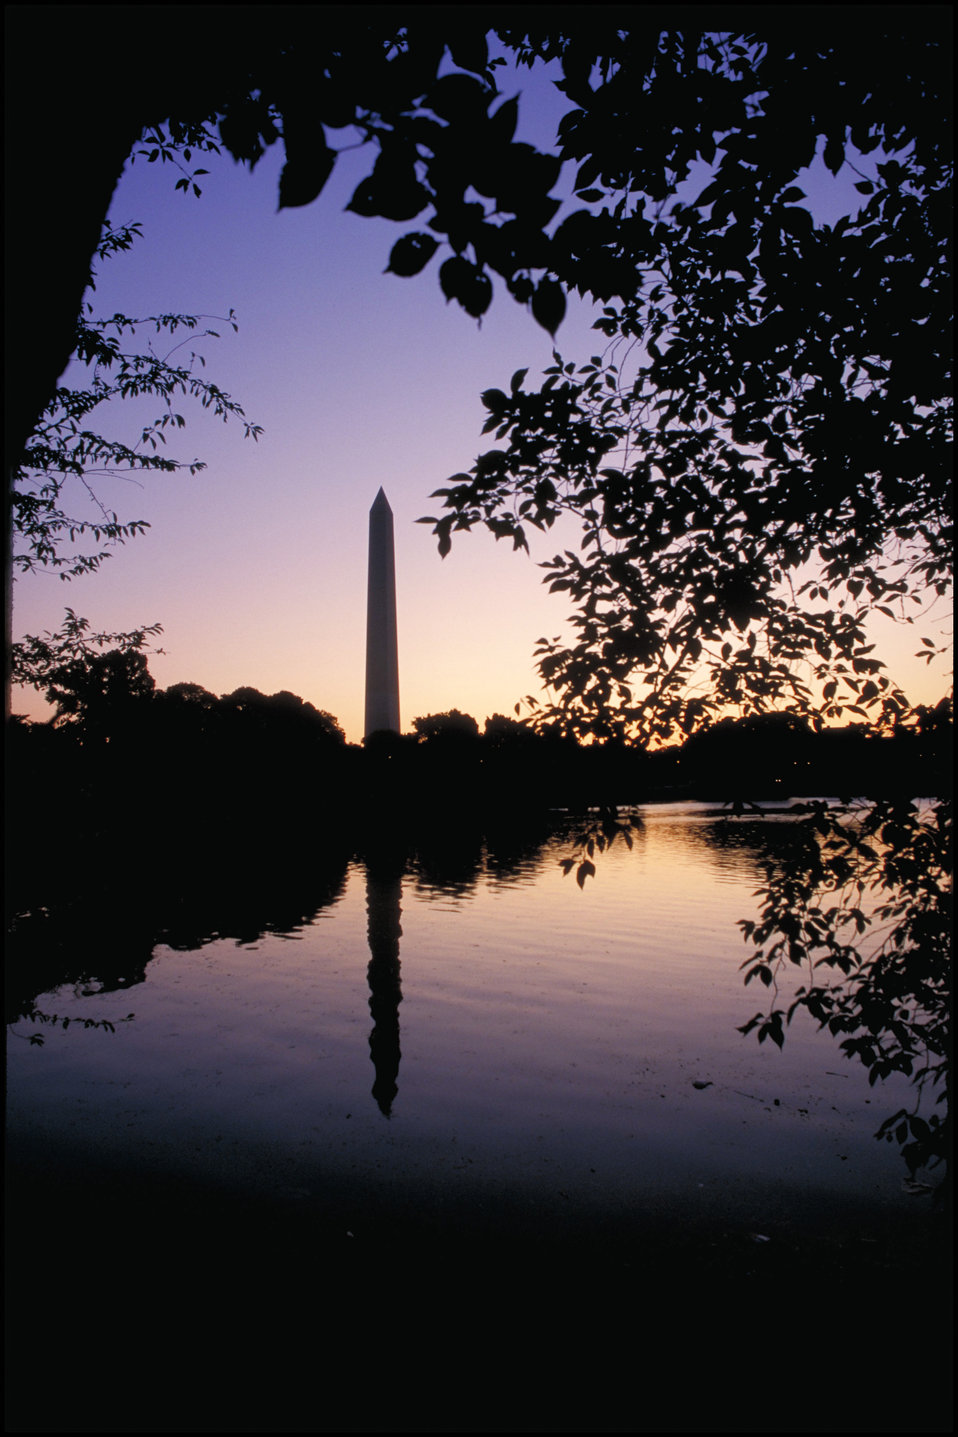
Washington Monument in Washington, DC.